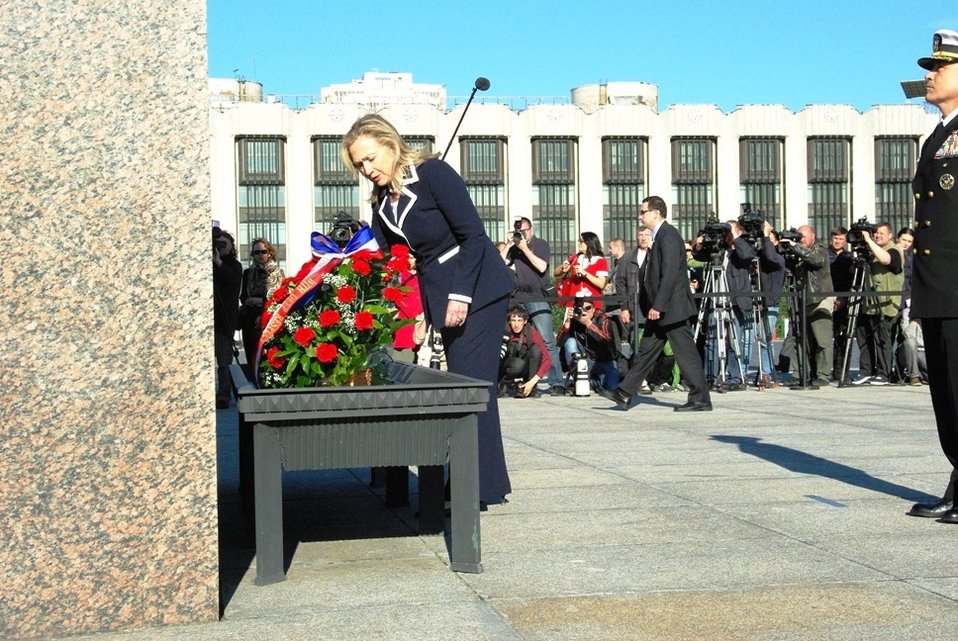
Secretary Clinton Places Carnations on the Monument

U.S. Secretary of State Hillary Rodham Clinton places a basket of red carnations at the foot of the obelisk at the Monument to the Heroic Defenders of Leningrad in St. Petersburg, Russia, on June 28, 2012.